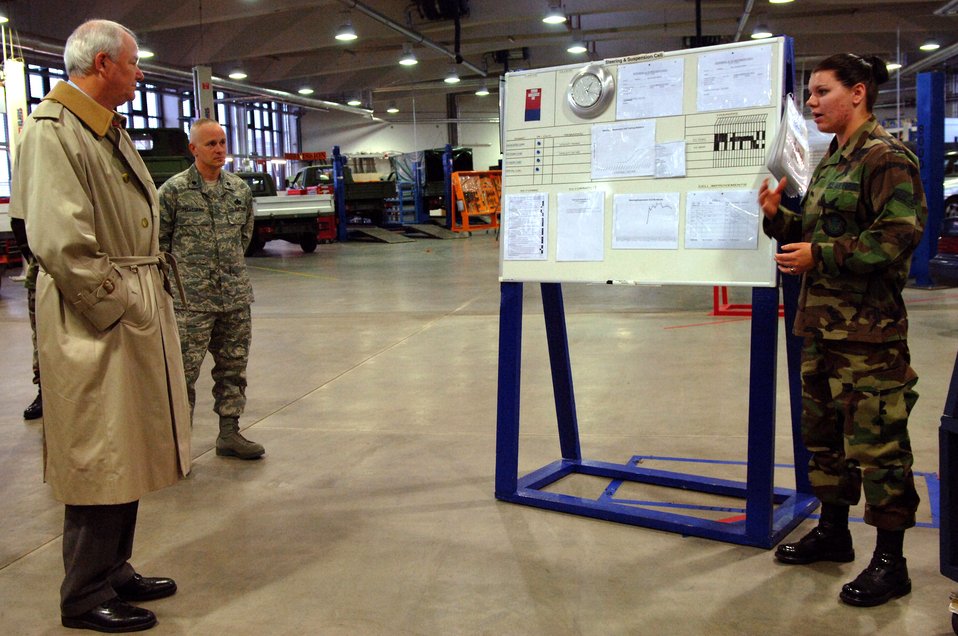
USAFE hosts AFSO 21 process council

Senior Airman Danae Palacios (right) briefs Secretary of the Air Force Michael W. Wynne (left) on the use of Air Force Smart Operations for the 21st century tools to make work in the 435th Vehicle Readiness Squadron's steering and suspension cell more productive with fewer defects and returns Dec. 11 at Ramstein Air Base, Germany. Airman Palacios is assigned to the 435th Vehicle Readiness Squadron.